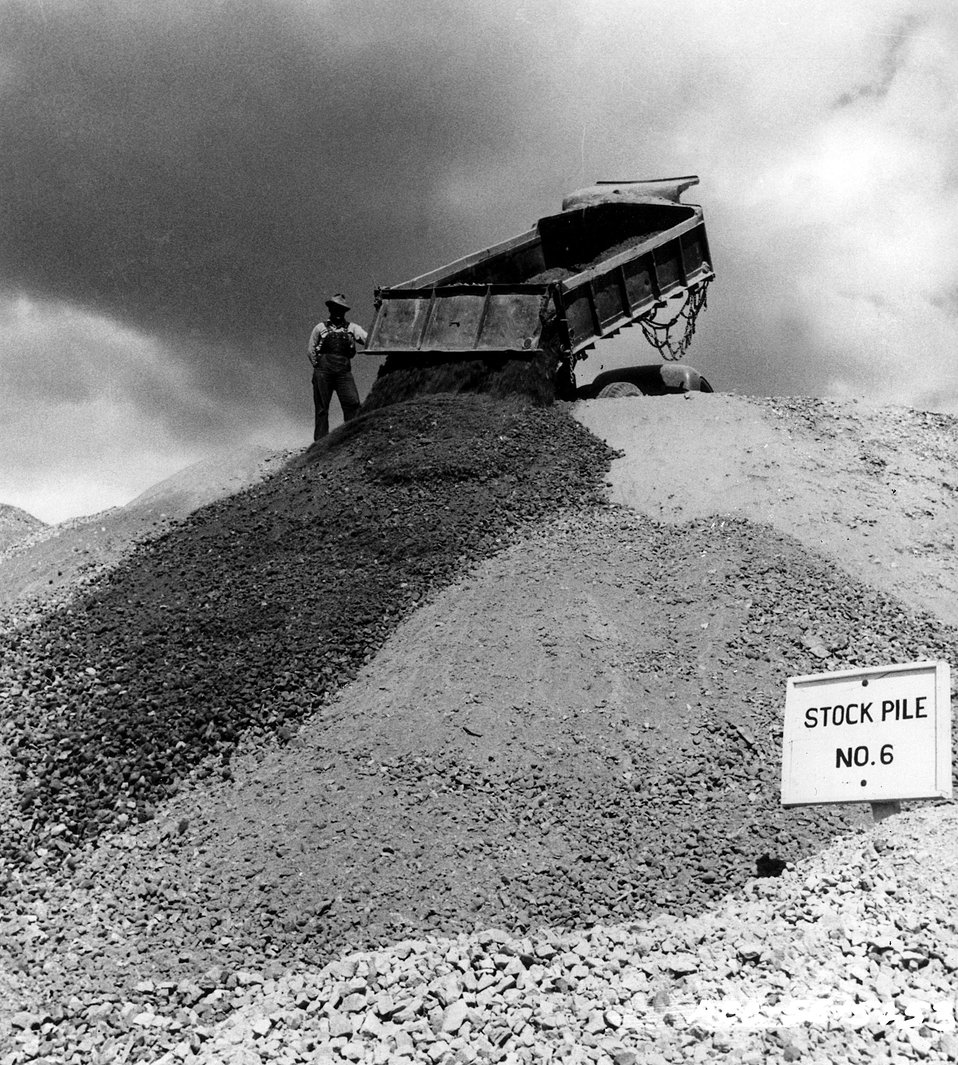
Uranium ore stockpiled before 'treated and 'coked' in an ore processing plant. c. 1955